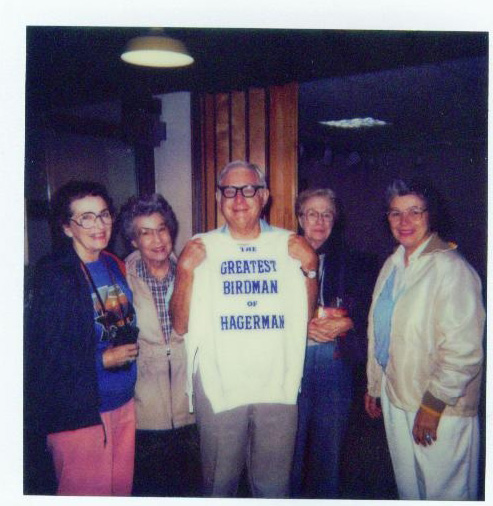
Karl Haller and friends

Surrounded by fellow birders, Karl Haller displays a shirt given to him by refuge staff. It reads, 'The Greatest Birdman of Hagerman.'